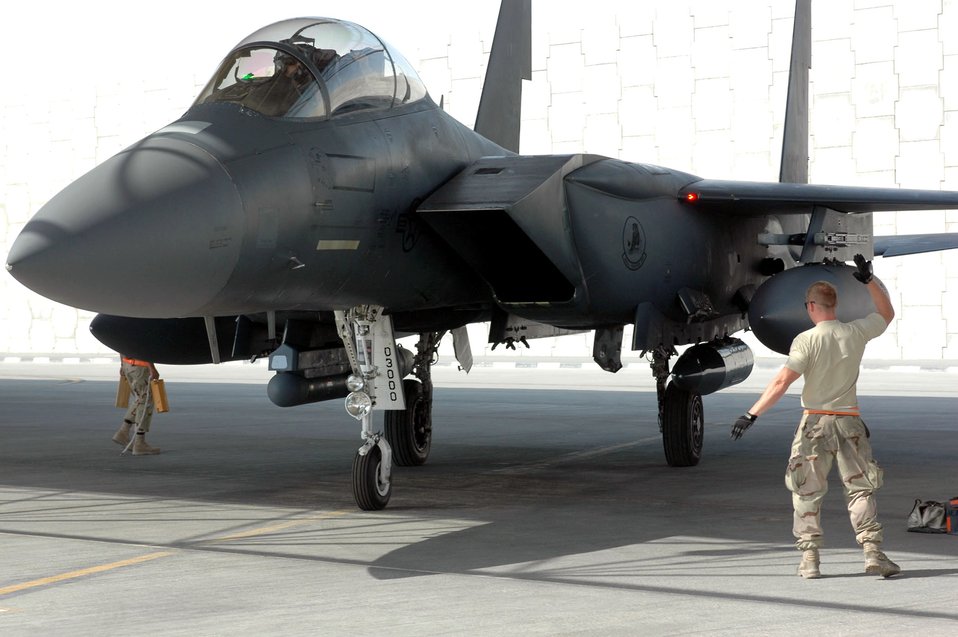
Airpower Summary for June 26, 2007

An Air Force F-15E Strike Eagle crew chief guides his aircraft into position at a base in Southwest Asia after a close-air-support mission. F-15Es were part of the 30 coalition close-air-support missions flown in Afghanistan June 26.